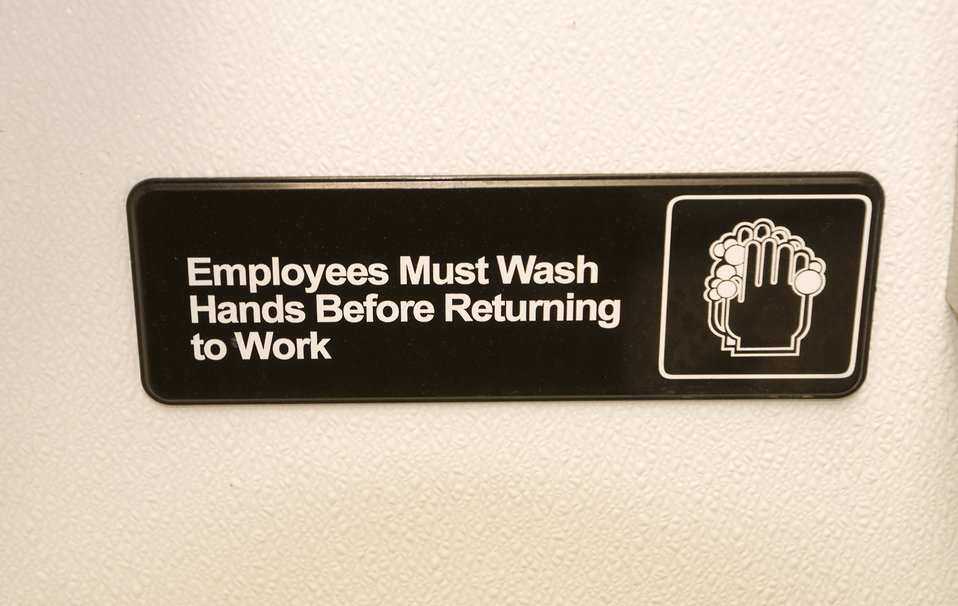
This image depicts the interior of a bathroom, specifically, the wall just above the sink area. Adhered to the wall, was a sign which read 'Employees Must Wash Hands Before Returning to Work', and included a simple graphic depicting two hands creating suds, as they scrubbed on another.